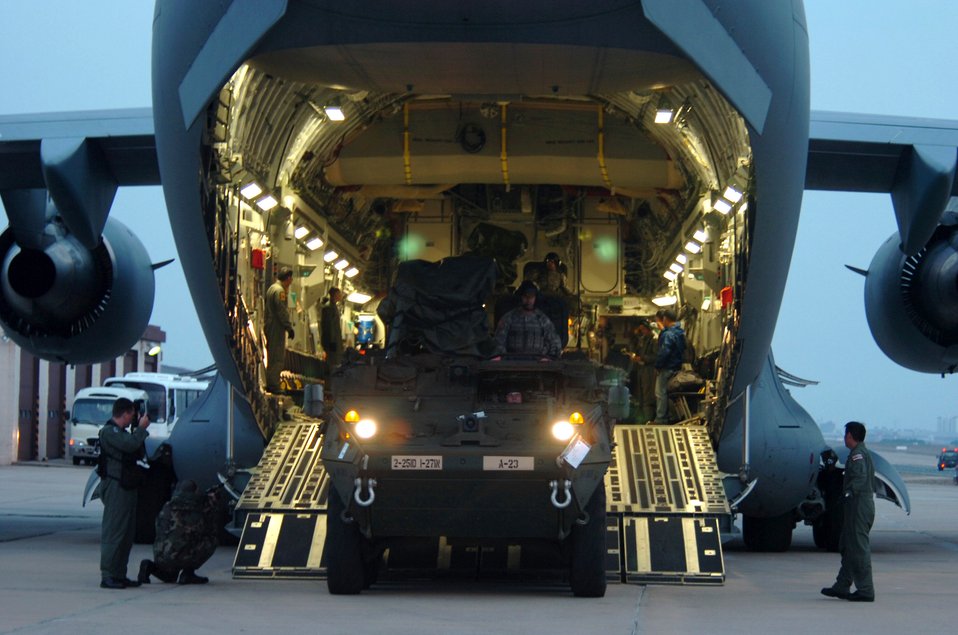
Globemaster delivers to Foal Eagle 2007

An M1126 Stryker infantry carrier vehicle exits a C-17 Globemaster III March 18 in Daegu, South Korea, for Exercise Foal Eagle 2007. The focus of the exercise is on strategic, operational and tactical aspects of general military operations in the Korean theater of operations. Its intent is to demonstrate resolve to support the Republic of Korea against external aggression while improving ROK - U.S. combat readiness and joint and combined interoperability. The C-17 is from the 15th Airlift Wing at Hickam Air Force Base, Hawaii.